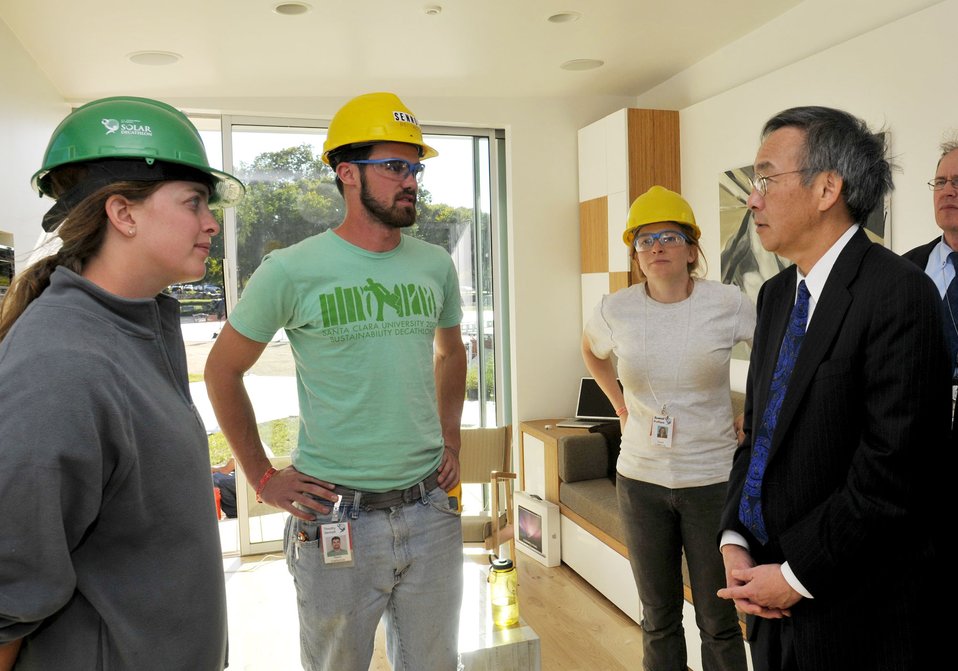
Solar Decathlon 2009 on the National Mall, with Sec. Chu

Solar Decathlon 09